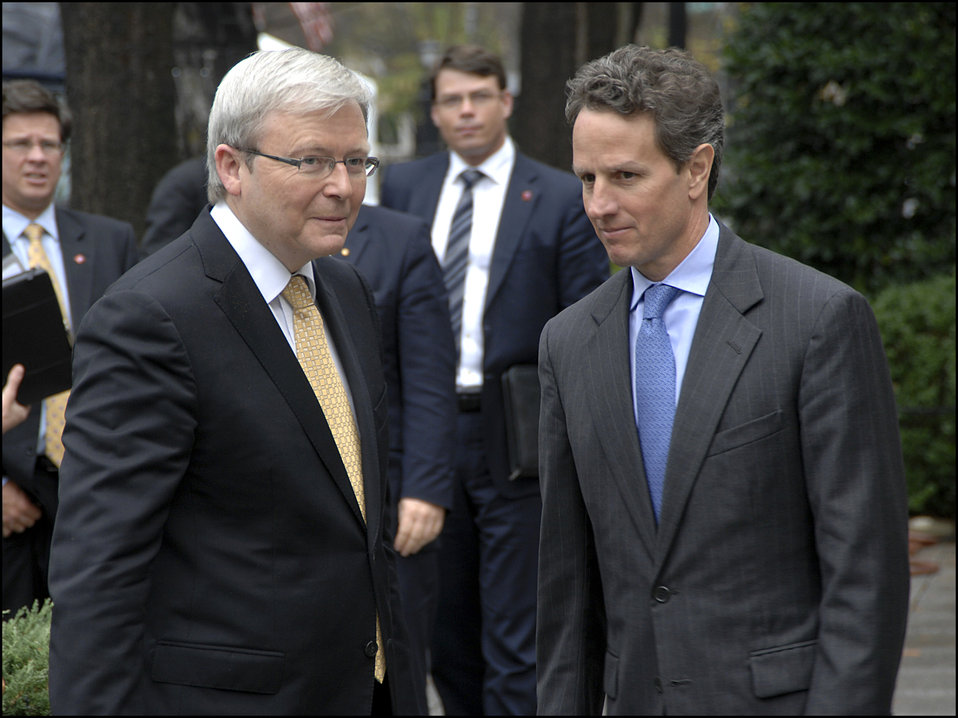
Australian Prime Minister Rudd

Secretary Geithner and Australian Prime Minister Rudd outside Treasury on November 30, 2009.